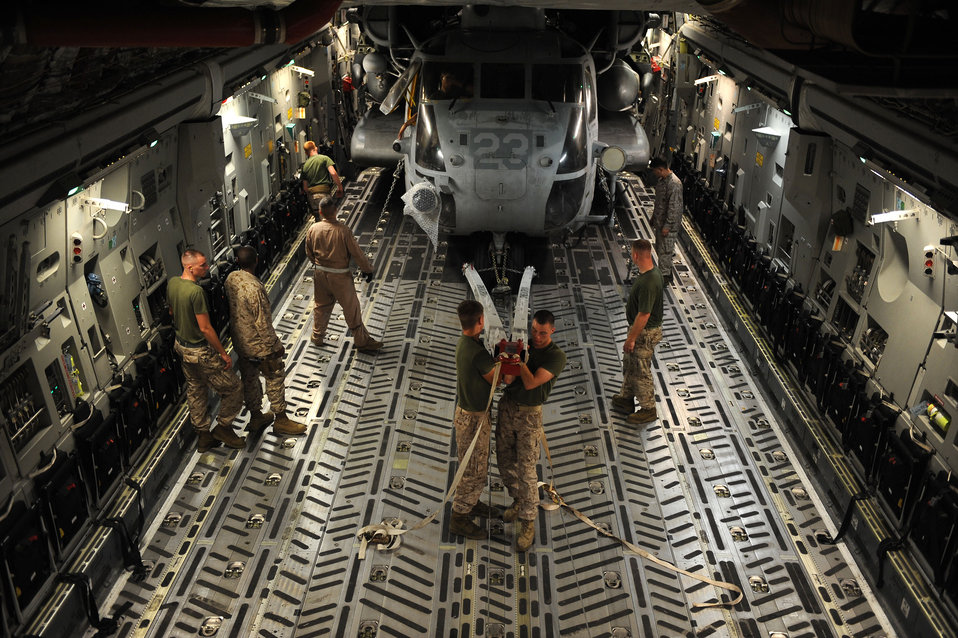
Pakistan flood relief effort

Master Sgt. Bill Lasage and Marines from the 266th Medium Tilt Rotor Squadron position an MH-53E Super Stallion in the cargo area of a C-17A Globemaster III Aug. 21, 2010, at Marine Corps Air Station Cherry Point, NC. Sergeant Lasage is a C-17A loadmaster assigned to the14th Airlift Squadron at Joint Base Charleston, S.C.